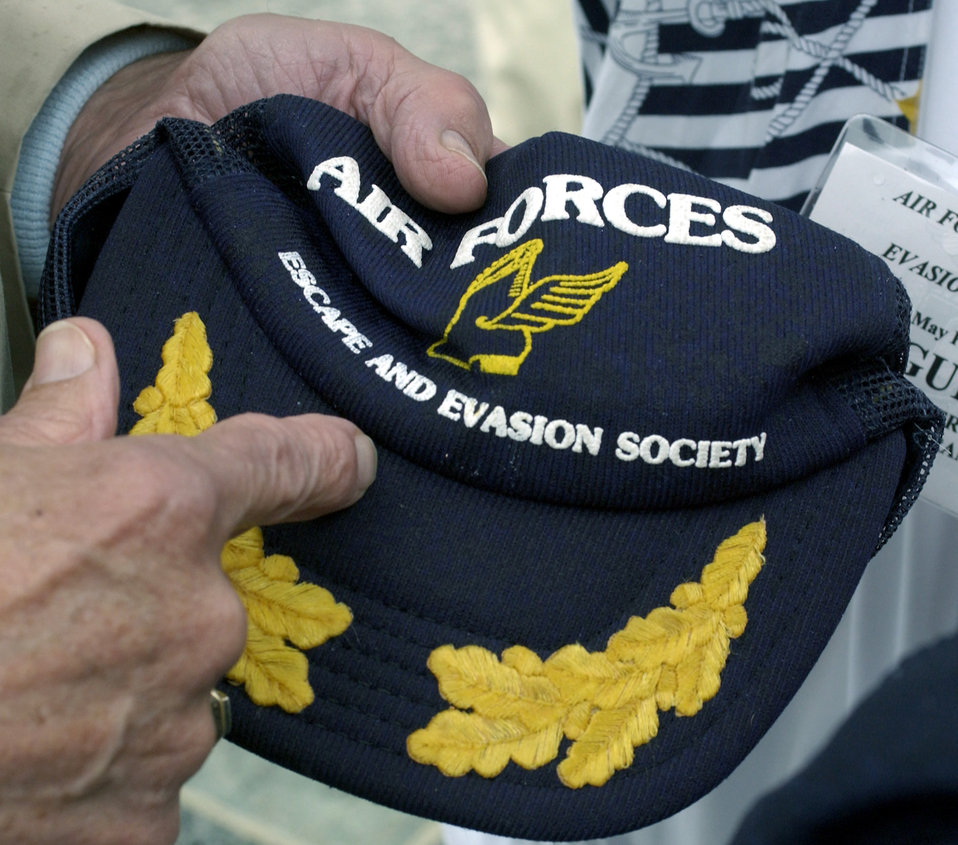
Air Force Escape and Evasion Society

WASHINGTON -- An Air Forces Escape and Evasion Society member explains the significance of the winged boot emblem on his hat during a visit to the newly opened World War II Memorial here May 3. He said the winged boot signified that he had walked to freedom while evading enemy capture after he was shot down in World War II. The society comprises both U.S. Airmen who successfully evaded capture after bailing out of their aircraft over Europe in World War II and a number of the European civilians who helped them.